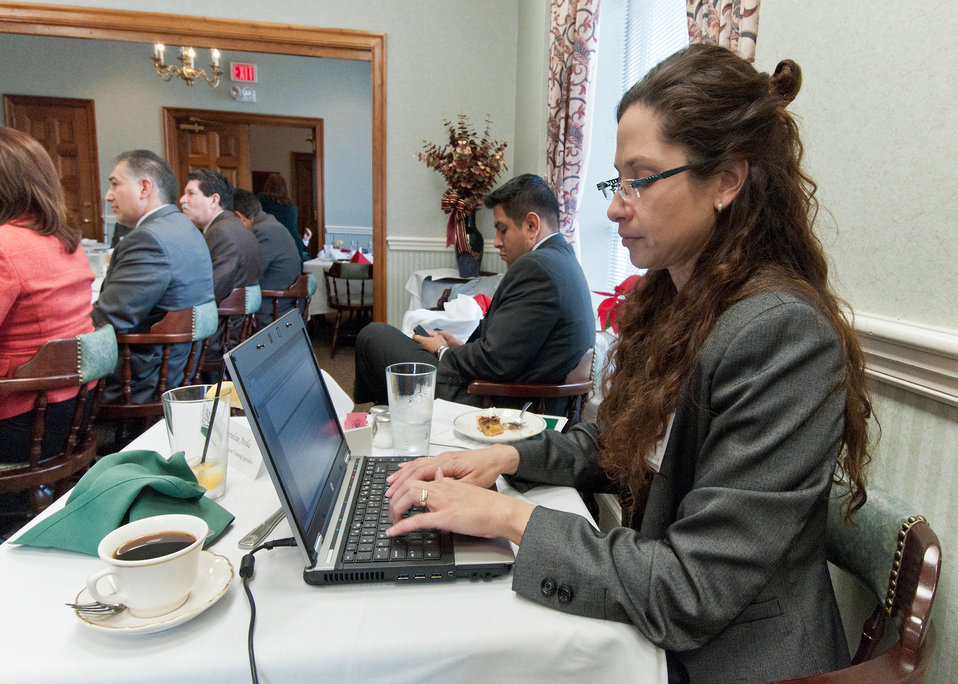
Marielsie Avila, International Training Specialist, Foreign Agricultural Service and Secretary of the Hispanic American Cultural Effort (HACE) recorded the information discussed for inclusion in a report during the United States Department of Agriculture Hispanic Roundtable at the United States Department of Agriculture, Monday, December 5, 2011 in Washington, DC. The roundtable focused on recruitment, retention and employee development for the purpose of developing the USDA Hispanic recruitment Plan. The roundtable hosted several national Hispanic partners and recognized USDA Hispanic organizations and associations.